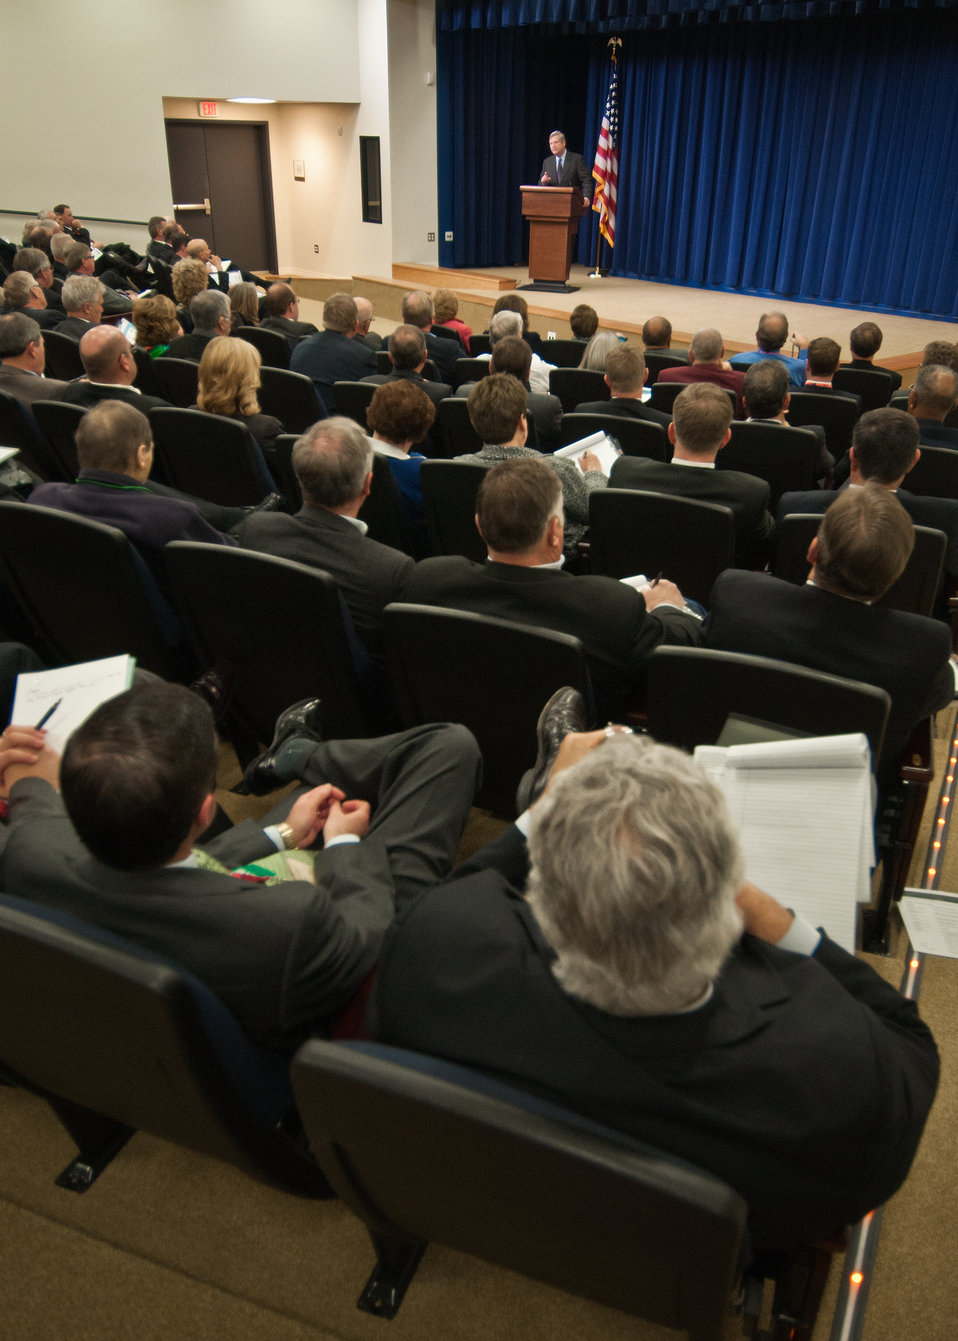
Agriculture Secretary Tom Vilsack spoke to the 11th Annual Meeting of State Agriculture and Rural Leaders at the Eisenhower Executive Office Building in Washington, D.C., on Friday, January 6, 2012. Accompanying Secretary Vilsack were members of his subcabinet, Dr. Elisabeth Hagen, Undersecretary, Food Safety, Dr. Catherine Woteki, Chief Scientist, Undersecretary, Research Education and Economics, Dave White, Chief, Natural Resources Conservation Service and Doug O’Brien, Deputy Undersecretary, Rural Development. Secretary Vilsack and his cabinet members discussed a variety of agriculture and rural development topics affecting rural America.